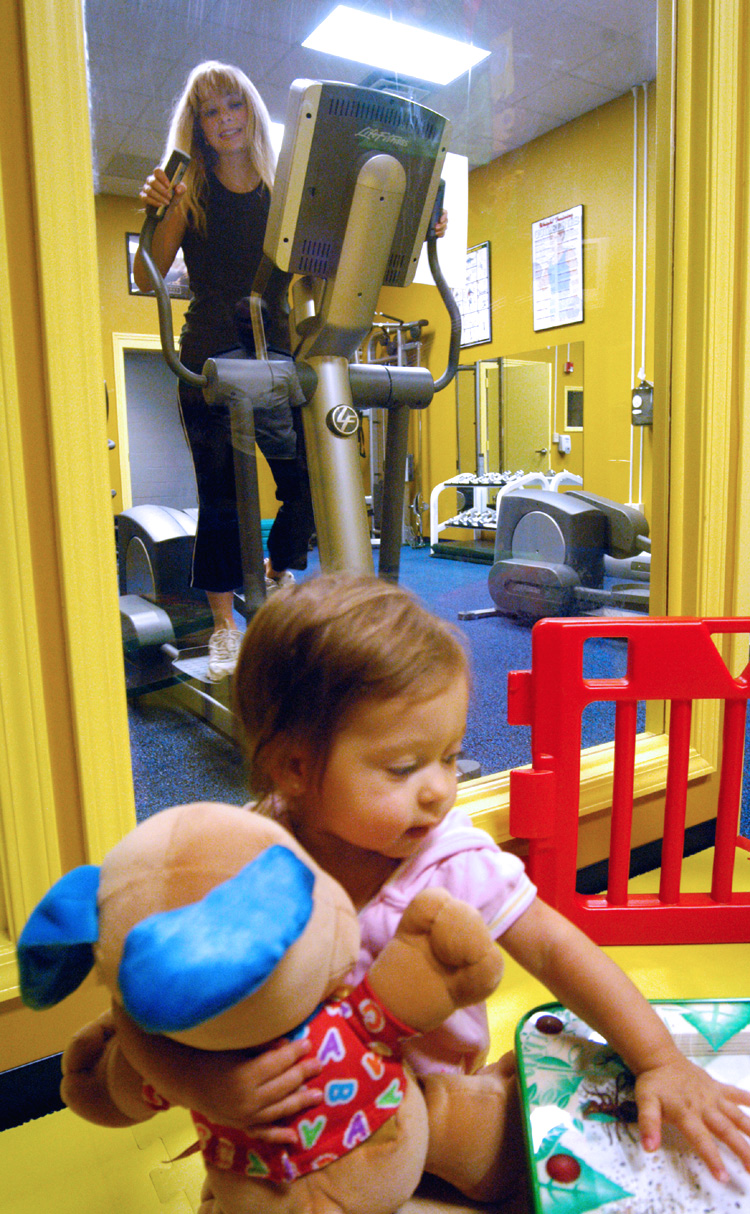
Family fitness room lets parents get fit while children play

ROBINS AIR FORCE BASE, Ga. -- Bella Zuniga, 1, plays while her mother, Samantha, works out in the new family fitness room here.